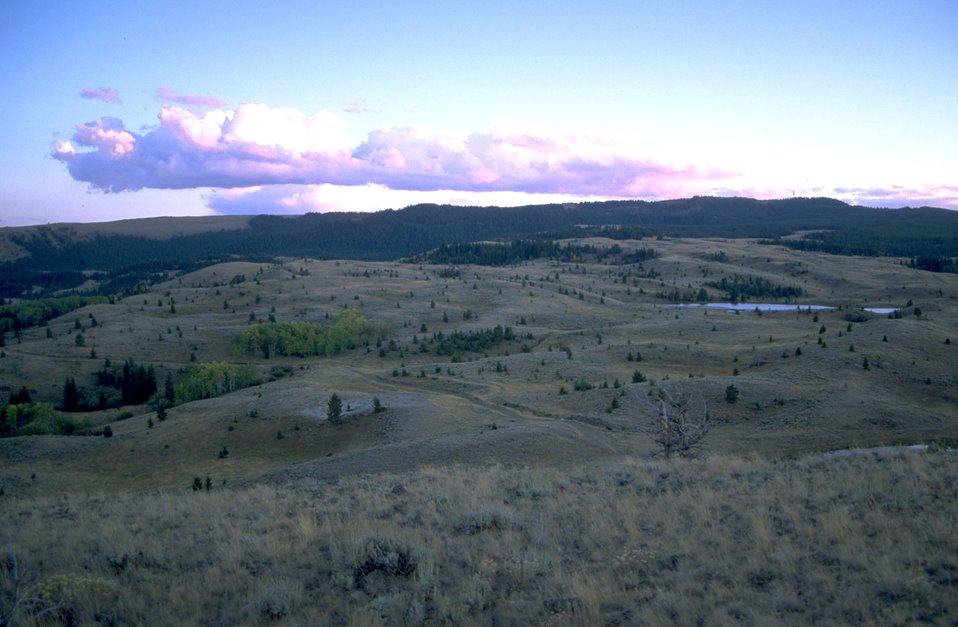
Grass-covered hills with the sun reflecting on the clouds in the evening light